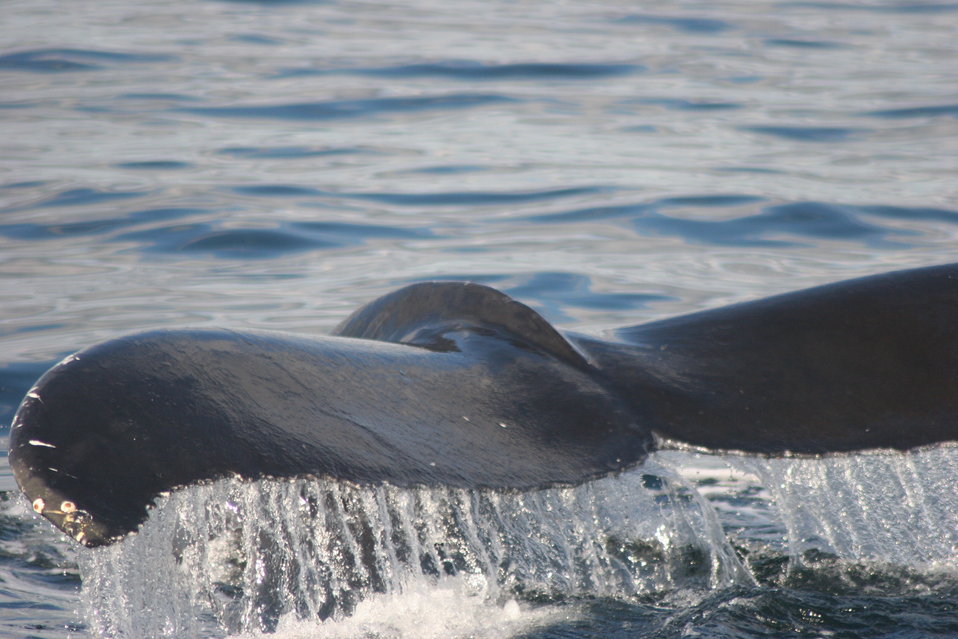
Tail of a Humpback Whale

Photographed off the coast of Gloucester, MA.